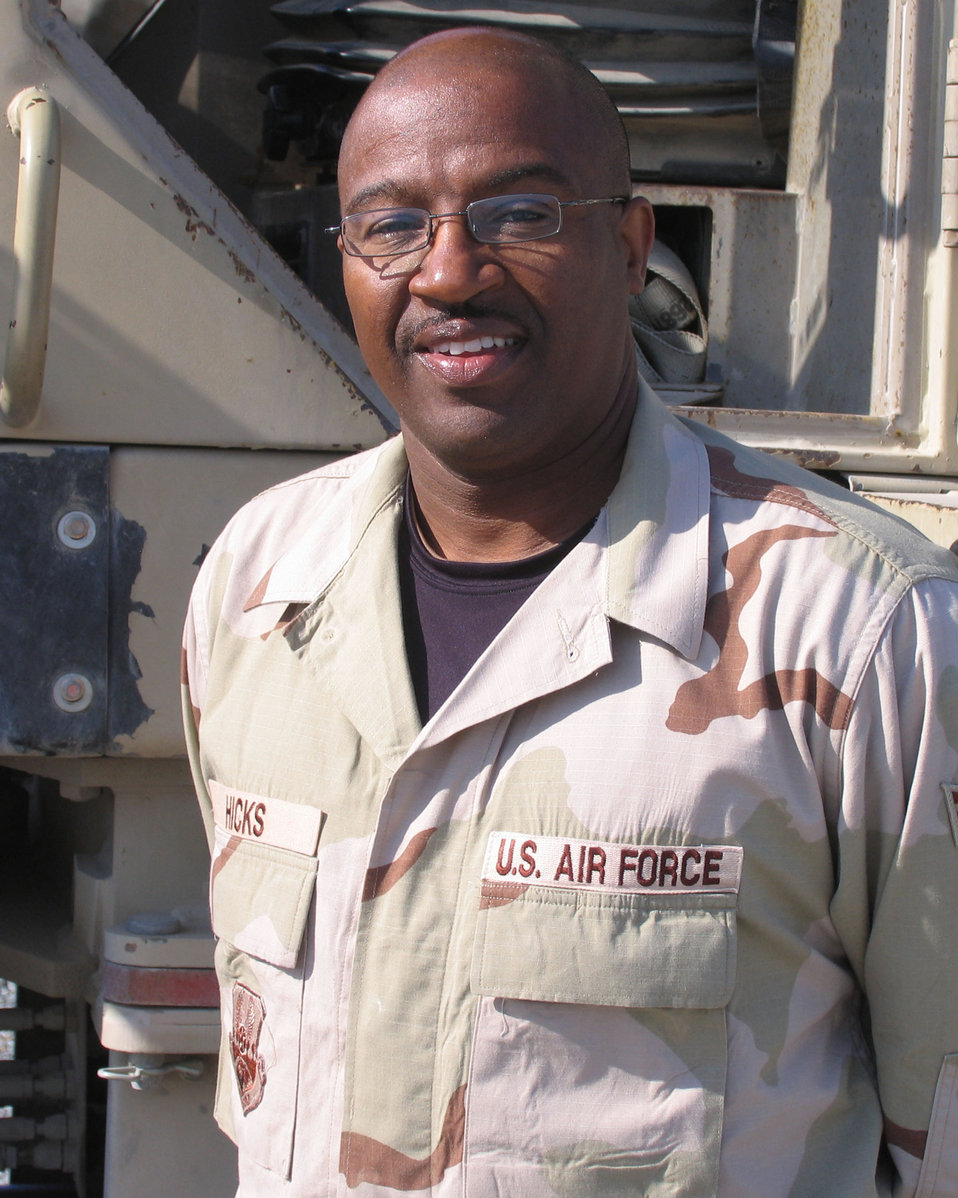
Serving through the season: Senior Airman Douglas Hicks

Senior Airman Douglas Hicks is serving on his first deployment to Southwest Asia during this holiday season. He is deployed to the 386th Expeditionary Logistics Readiness Squadron from Dobbins Air Reserve Base, Ga.